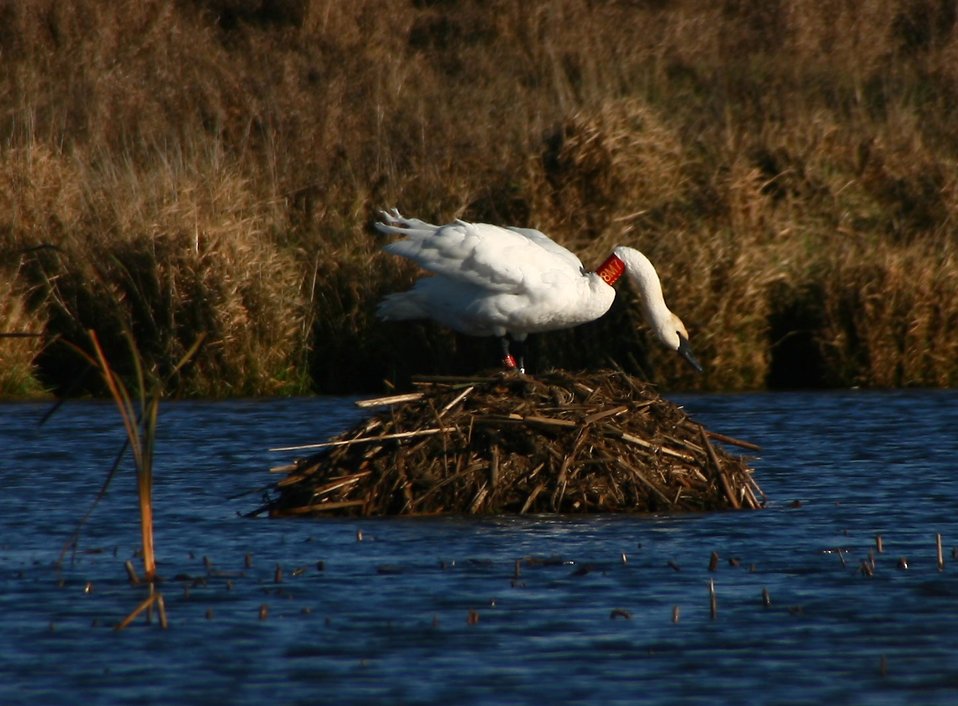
Restored Habitat Benefits Many Native Wildlife Species

A host of Federal, trust species, including this swan, benefit from wetland restoration projects delivered by the Partners for Fish and Wildlife program.

Landscapes with incredible wetland resources, such as the Rocky Mountain Front in Montana, are positively impacted by the Partners for Fish and Wildlife program.

Projects like this are funded by the U.S. Fish and Wildlife Service’s Partners for Fish and Wildlife program, whose habitat restoration projects are extraordinary engines for the U.S. economy. Restoration Returns: The Contribution of Partners for Fish and Wildlife Program and Coastal Program Projects to Local U.S. Economies finds that, in working directly with partners to implement vital on-the-ground habitat restoration, Service programs created more than 3,900 jobs in Fiscal Year 2011, generating a total economic stimulus of $327.6 million.

The “restoration economy” is a subset of green jobs that includes such industries as heavy equipment providers and operators, plant nurseries, landscape architects, and construction companies, among other firms.

Download the entire report at: www.fws.gov/home/restoration returns.html.